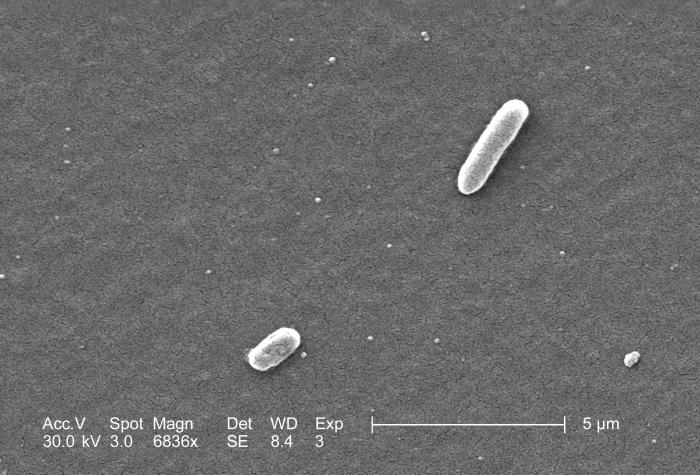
Under a magnification of 6836x, this scanning electron micrograph (SEM) depicted two Gram-negative Escherichia coli bacteria of the strain O157:H7, which is one of hundreds of strains of this bacterium. Although most strains are harmless, and live in the intestines of healthy humans and animals, this strain produces a powerful toxin, which can cause severe illness.E. coli O157:H7 was first recognized as a cause of illness in 1982 during an outbreak of severe bloody diarrhea; the outbreak was traced to contaminated hamburgers. Since then, most infections have come from eating undercooked ground beef.The combination of letters and numbers in the name of the bacterium refers to the specific markers found on its surface, which distinguishes it from other types of E. coli.